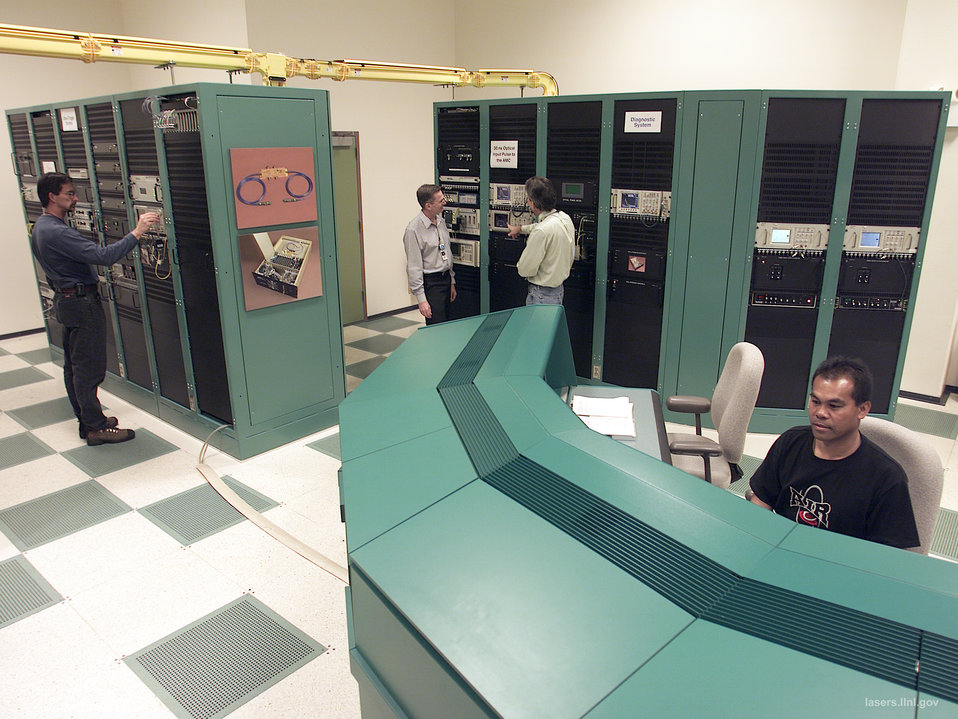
National Ignition Facility laser pulses are born in the master oscillator room, in which a compact laser oscillator generates low-energy (a few nanojoules) laser pulses.

The oscillator pulse is shaped in time and frequency-broadened, using the small range of multiple wavelengths produced in the fiber laser, to help smooth the intensity of the laser beam when it is ultimately focused on the target. There are 48 independent pulse shaping systems, and each of the pulses is transported on separate fiber optic cables to 48 preamplifier modules for further amplification.